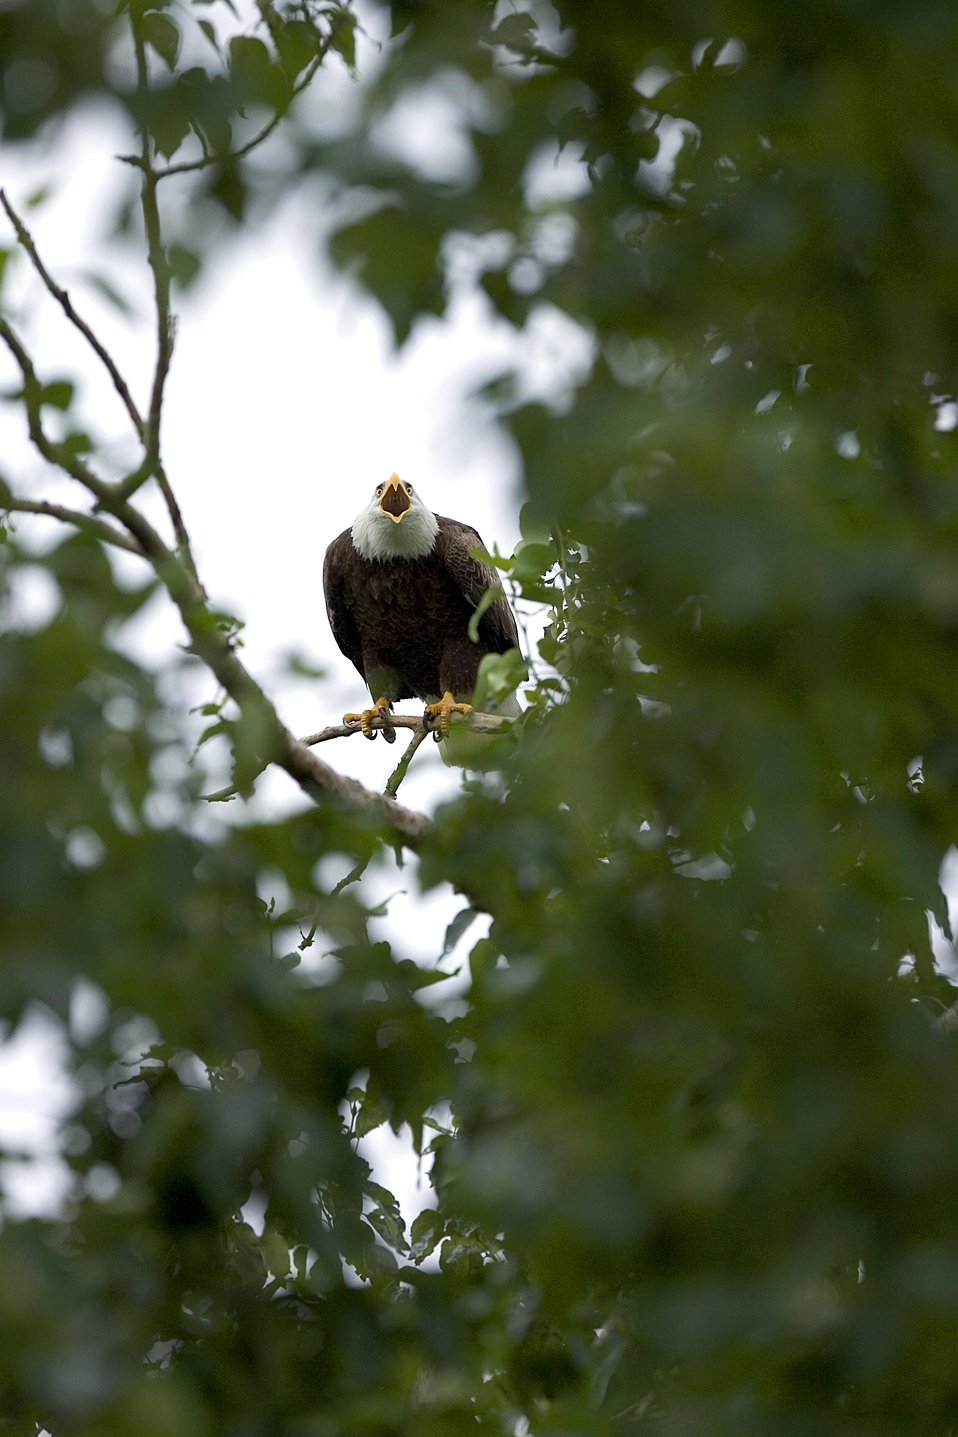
KOD Hildebrand (5)

Kodiak National Wildlife Refuge- Wildlife